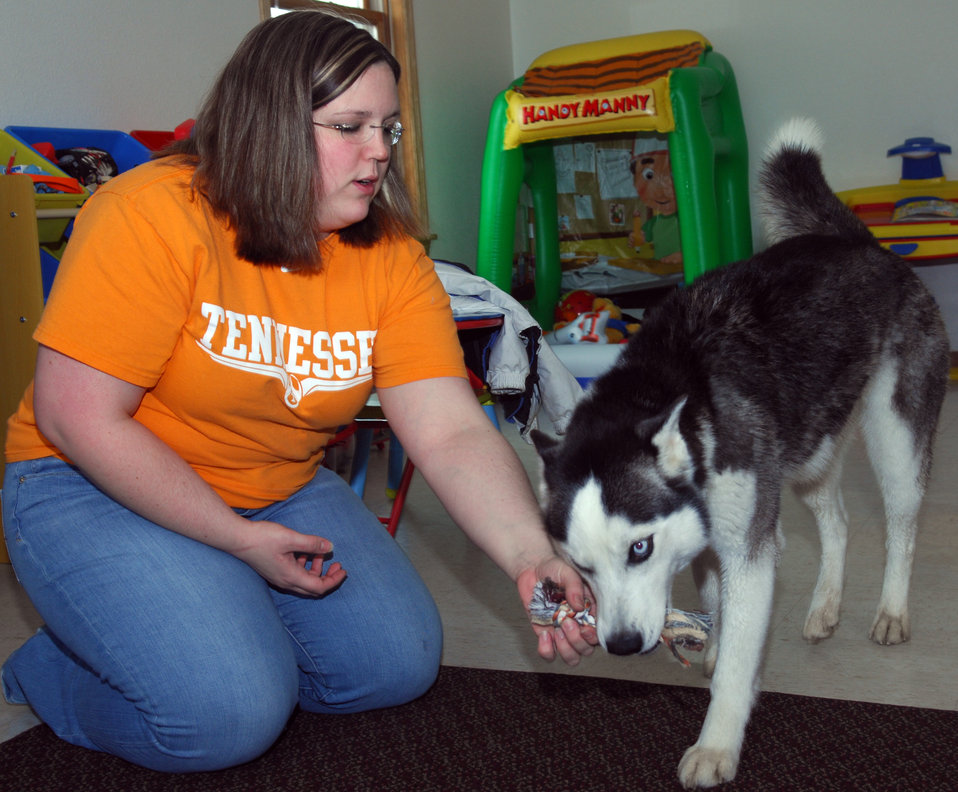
An unexplained journey

Racheal Conley plays with her dog, Bonnie, in their home March 25, 2010, at Minot Air Force Base, N.D . Because of a microchip implanted in Bonnie, the family was reunited with her following a four-month, 1,500-mile journey from Los Angeles. Mrs. Conley is the wife of Airman 1st Class Aaron Conley of the 5th Munitions Squadron.